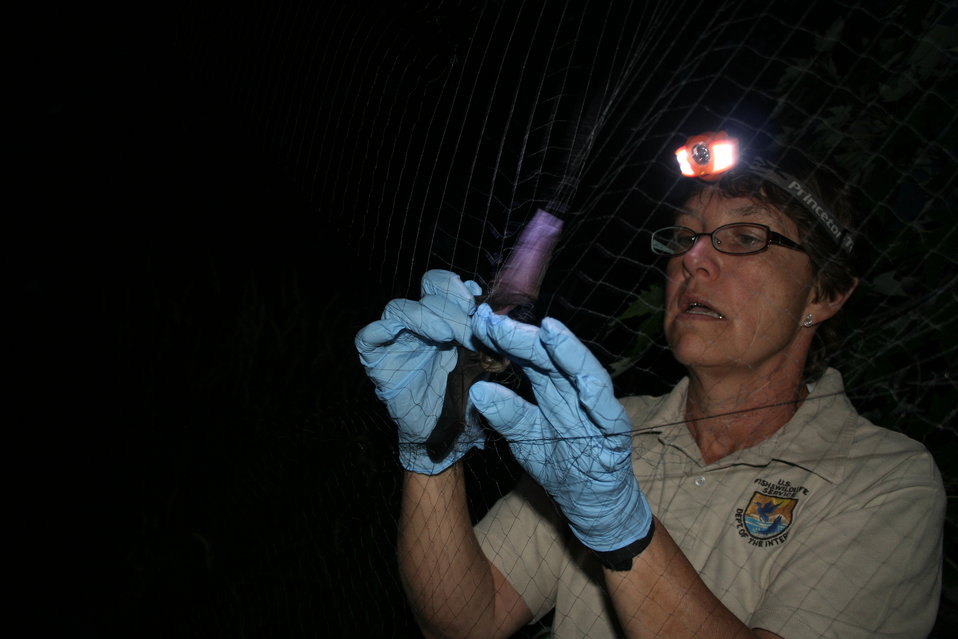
Biologist removes bat from mist net

USFWS endangered species biologist Susi von Oettingen removes a little brown bat from a mist net